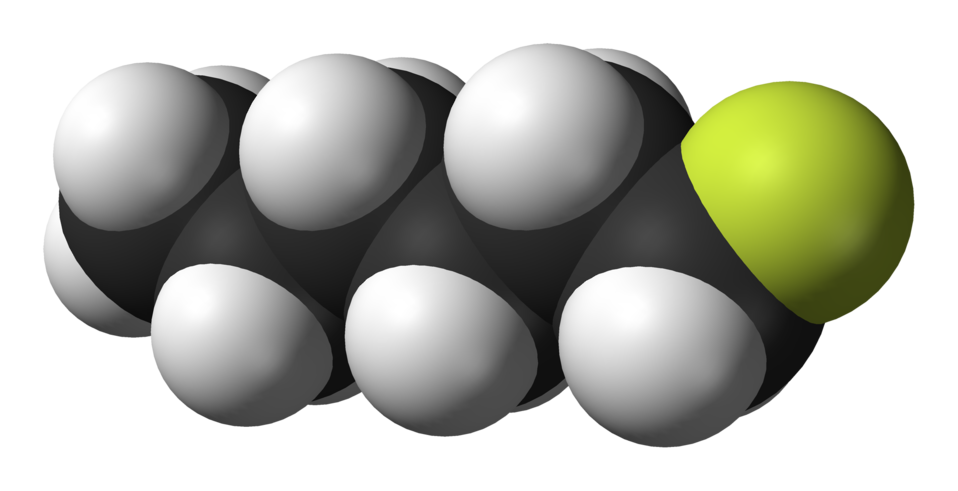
Space-filling model of the 1-fluorohexane molecule, C6H13F. Colour code: Carbon, C: grey-black Hydrogen, H: white Fluorine, F: yellow-green This image is not based on an experimental structure determination, but a search of the CSD for 1-fluoroalkyl groups returned crystal structures with a variety of fluoroalkyl conformations. The conformation chosen here is one in which the atoms C3–C2–C1–F are all coplanar, with C3–C2 and C1–F bonds antiperiplanar. Image generated in Accelrys DS Visualizer.